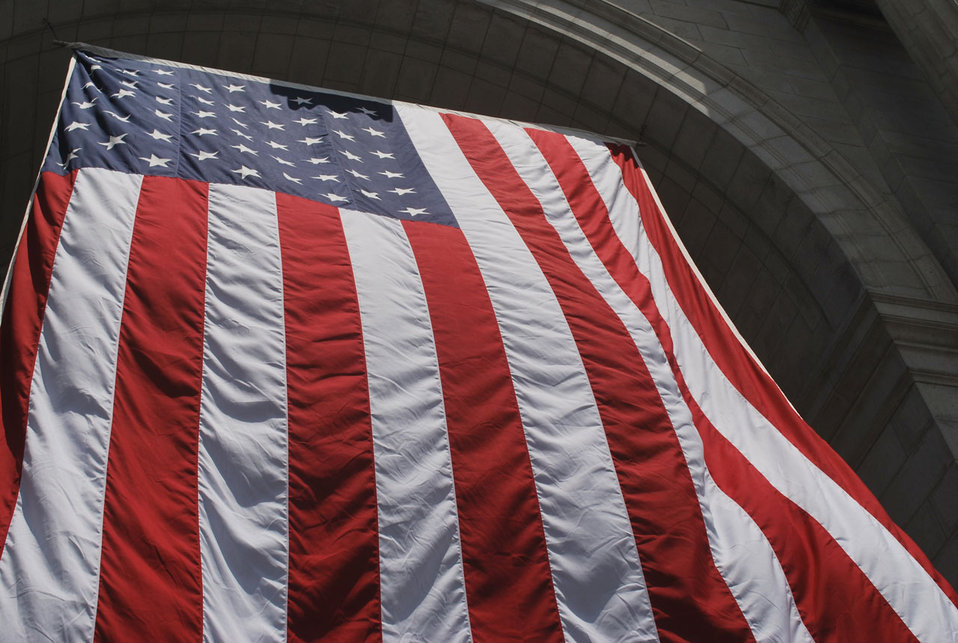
Us flag

Hanging us flag.